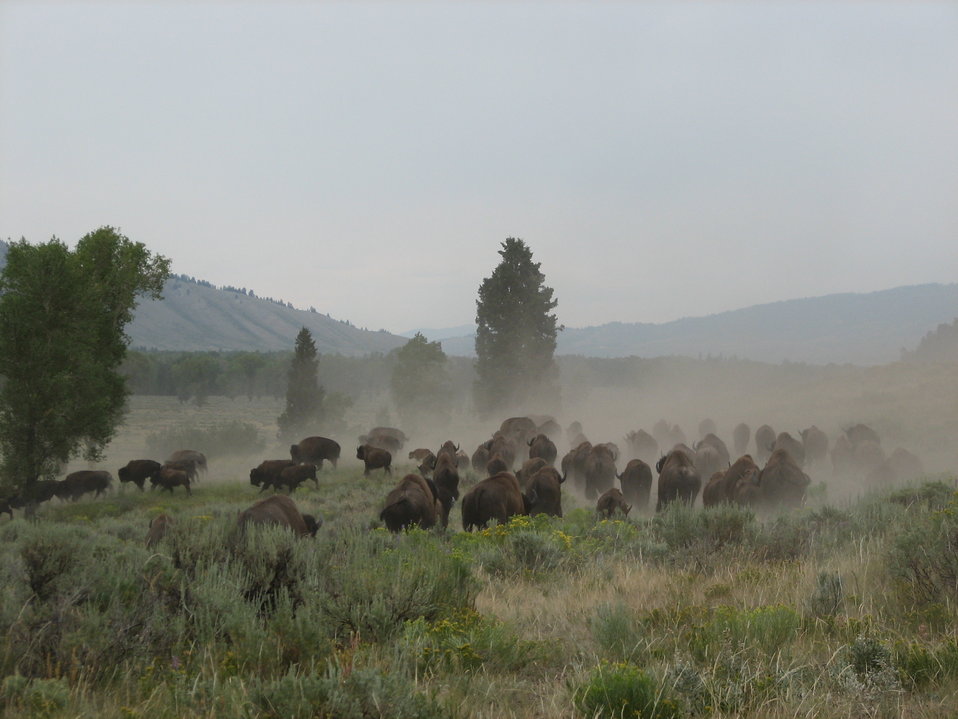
Bison on the National Elk Refuge

Though massive in size, bison are quick on their feet. They can run at speeds of up to 40 miles per hour.